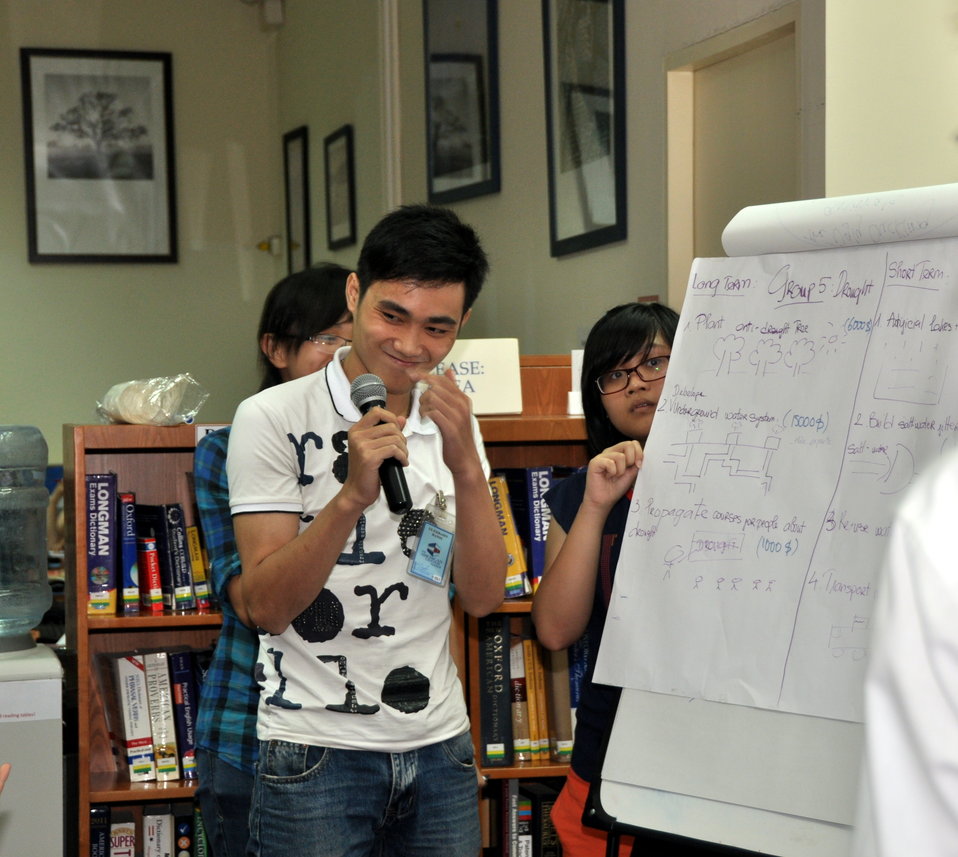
Climate Change Talk at the American Center

Hanoi, May 28, 2013.